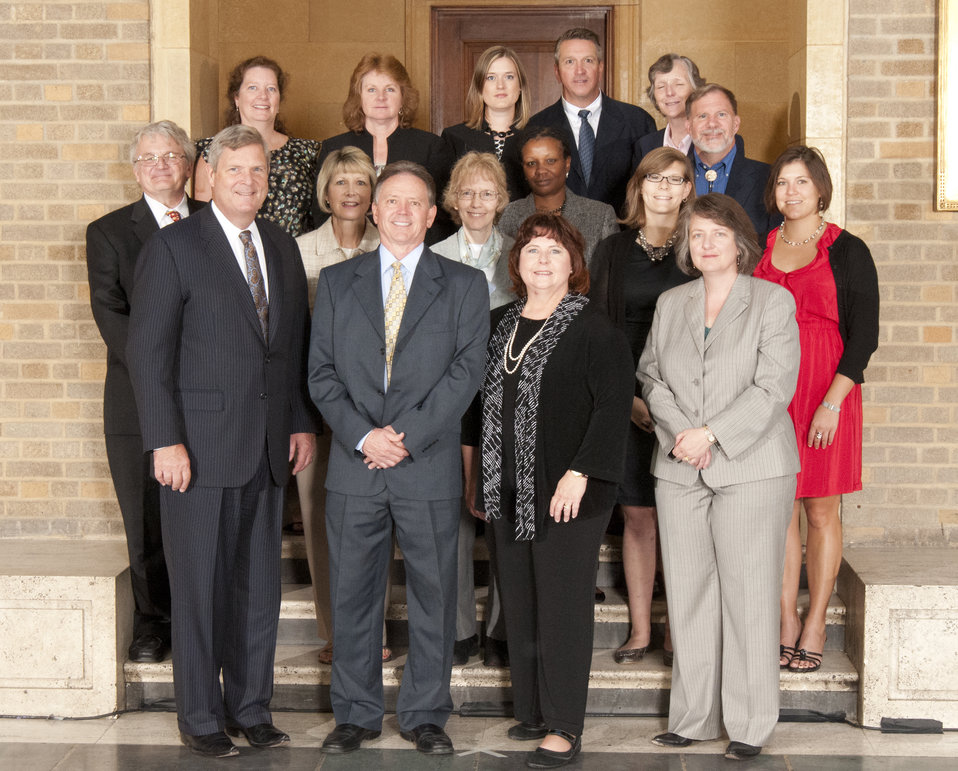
Agriculture Secretary Tom Vilsack and Deputy Agriculture Secretary Kathleen Merrigan with Honor Award Group Produce Safety University, Food Safety Inspection Service (FSIS) on the patio of the U.S. Department of Agriculture in Washington, D.C. on Wednesday, Sept. 12, 2012. The Produce Safety University Group managed the Produce Safety University, which widely disseminates training for school nutrition professionals on handling fresh produce safely, resulting in increased access to fresh fruits and vegetables for children.